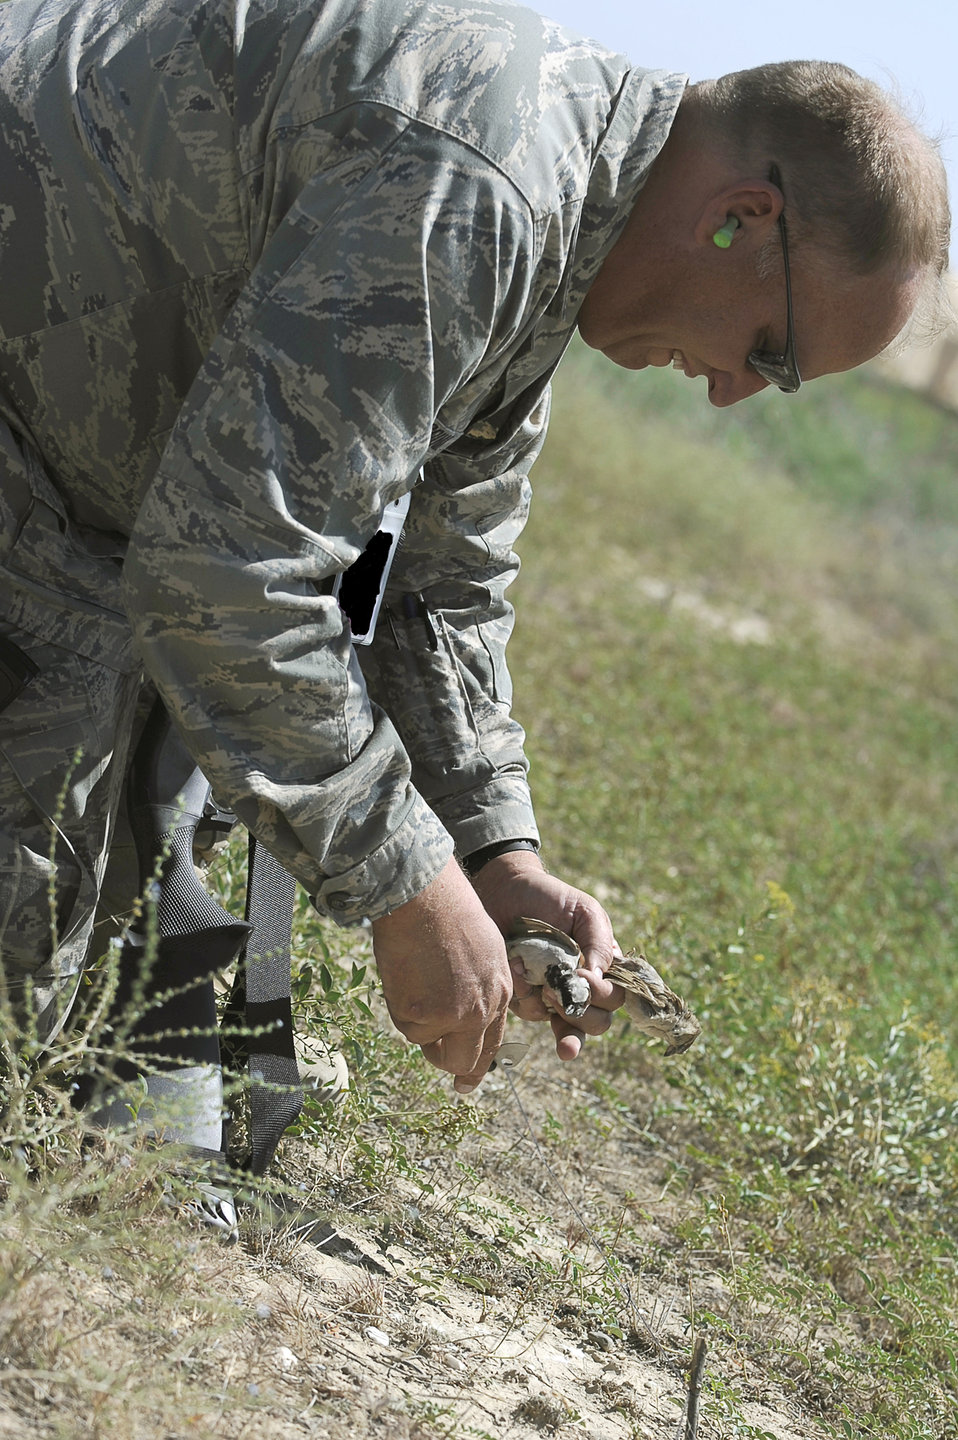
Afghan falconers and Airmen keep airfield safe

Todd Grimm removes a bird from a snare near the flightline, May 20, 2010, at Bagram Airfield, Afghanistan. Mr. Grimm is a wildlife biologist with the U.S. Department of Agriculture, Wildlife Service program, working with the 455th Air Expeditionary Wing Safety Office to keep wildlife from interfering with flying operations.